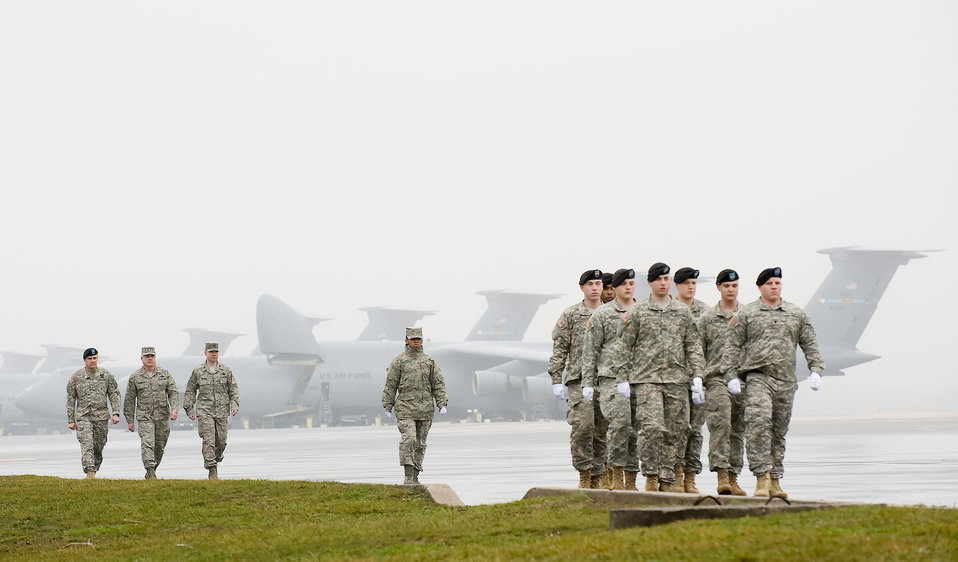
Dignified transfer

Brig. Gen. Kenneth Roberts (from left), special assistant for the director of the Army National Guard; Gen. Carrol H.